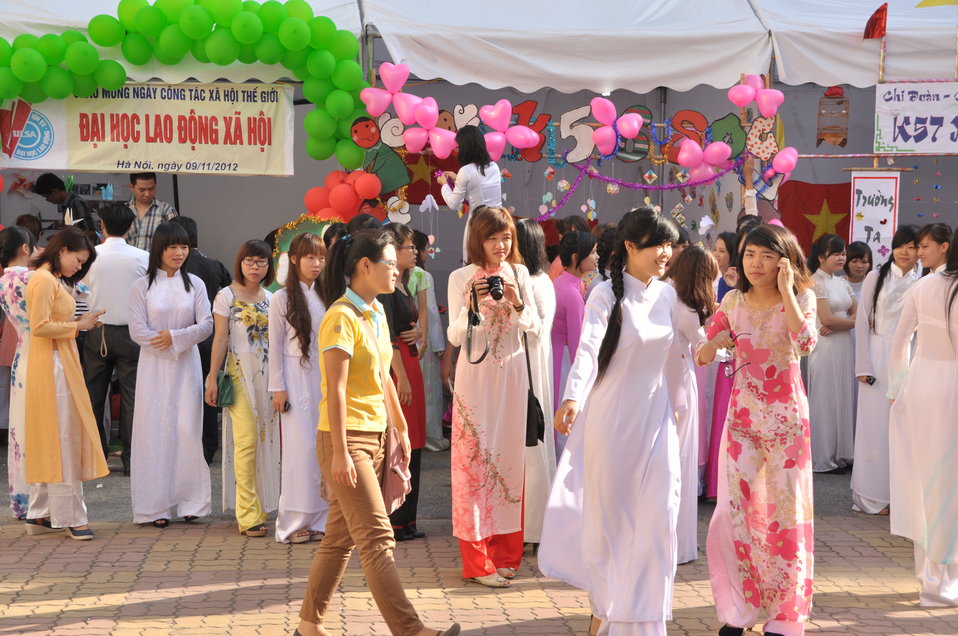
USAID Supports Social Work Education

Photo: @USAIDVietnam, November 9, 2012